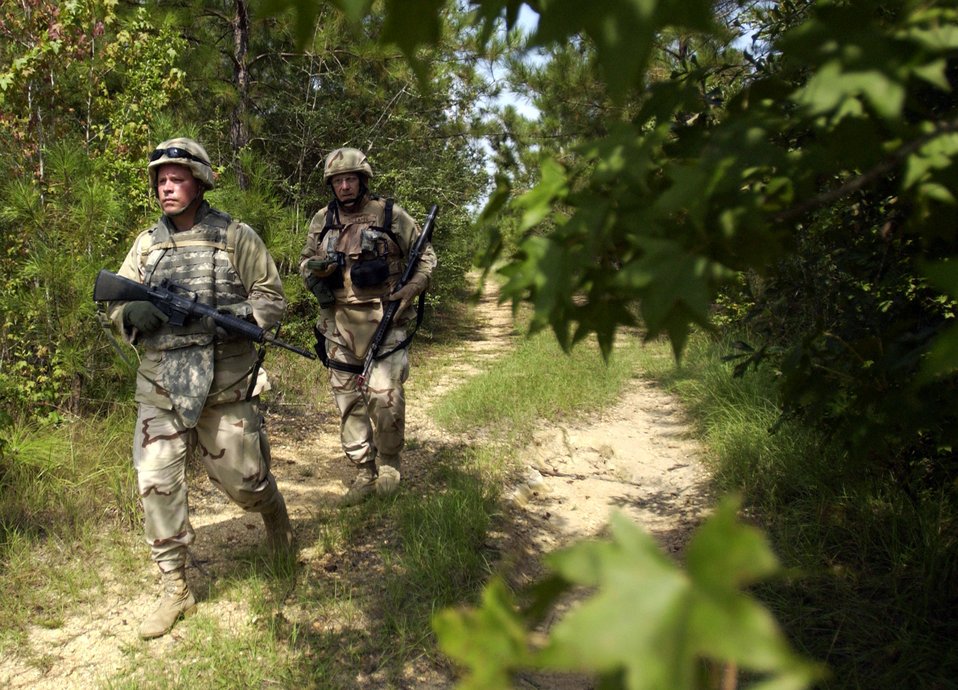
Air Force trains to fill Army deployments

Capt. Michael Schroeder (front) and Tech. Sgt. Gene Lappe search for a land navigation point and improvised explosive devices Aug. 30 using techniques learned at Camp Shelby, Miss. Camp Shelby is one of several Army installations providing training to military personnel preparing to deploy to Southwest Asia.